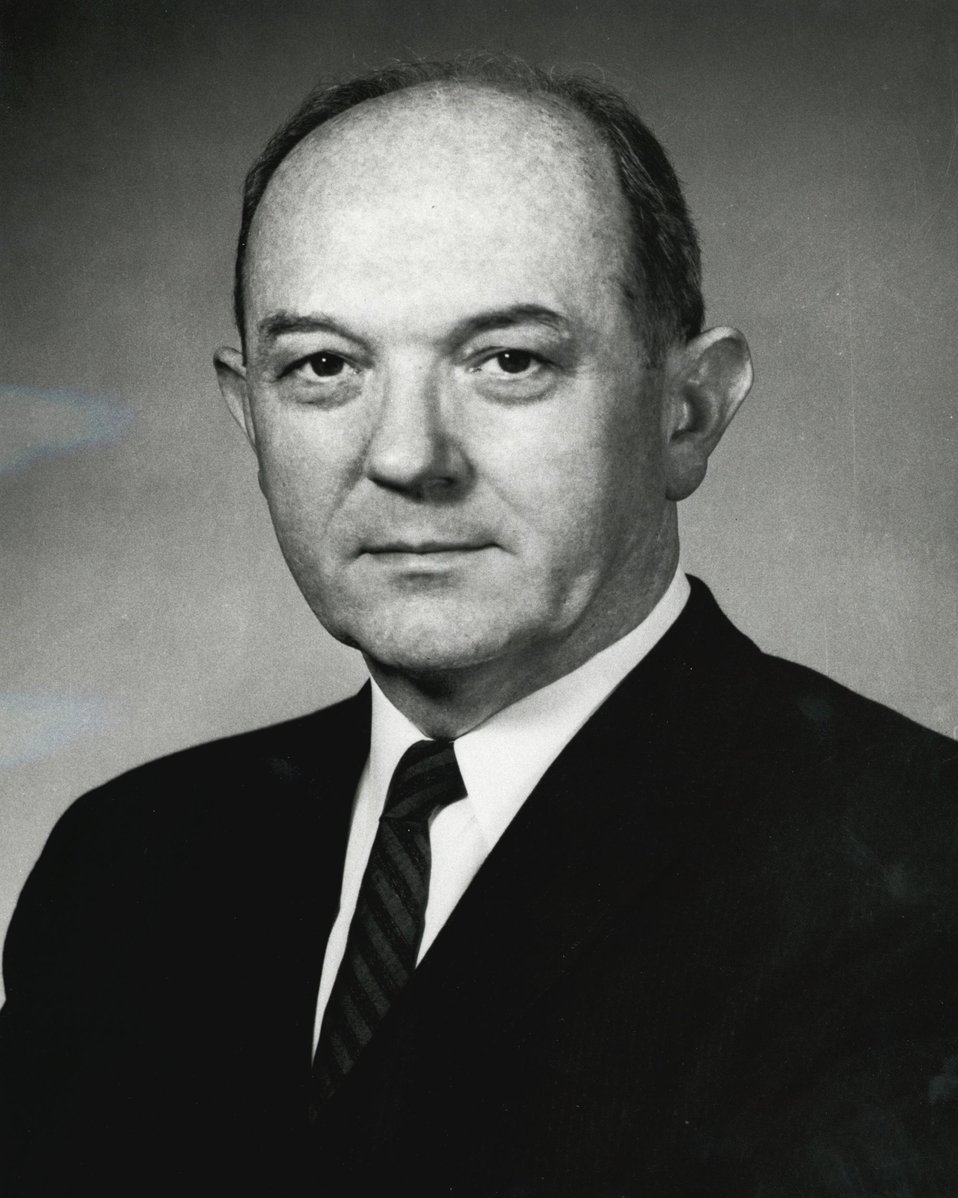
Dean Rusk, U.S. Secretary of State, January 21, 1961 to January 20, 1969